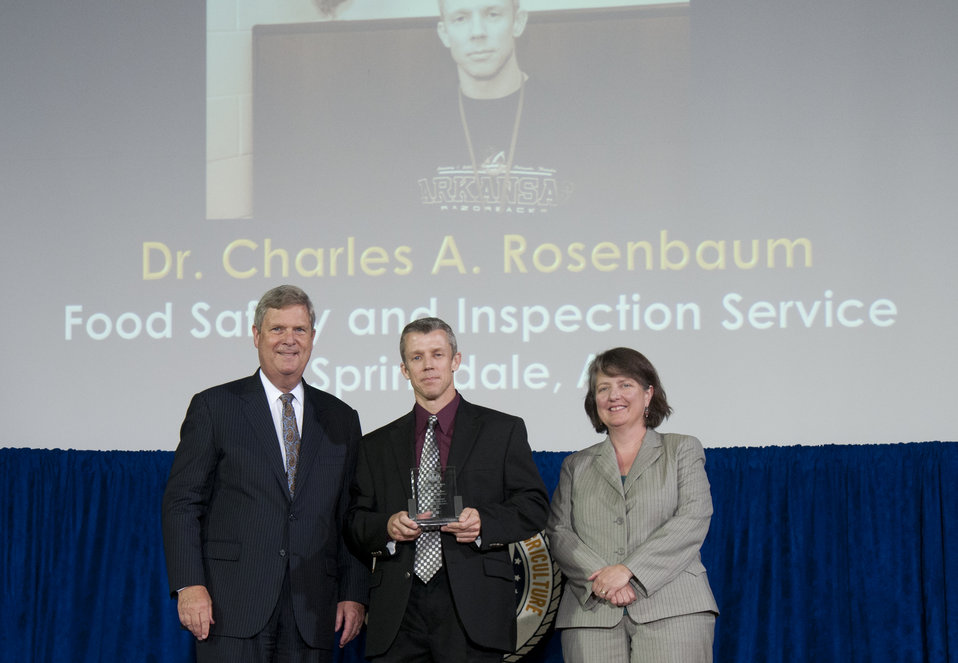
Agriculture Secretary Tom Vilsack and Agriculture Deputy Secretary Kathleen Merrigan present the Secretary’s Honor Award for Heroism and Emergency Response to Food Safety and Inspection Service (FSIS) employee Dr. Charles A. Rosenbaum at the U.S. Department of Agriculture (USDA) 64th Annual Honor Awards Ceremony in Washington, D.C. on Wednesday, Sept. 12, 2012. Rosenbaum received his award for his quick thinking and swift actions that saved the life of a fellow USDA employee.